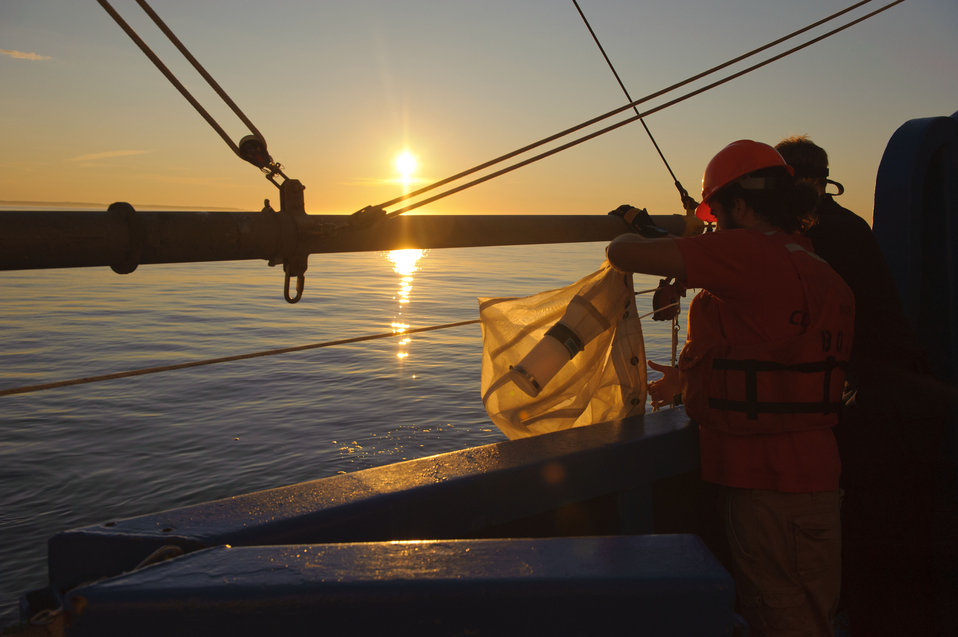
August 9, 2011 Sunrise zooplankton tow

Out near the mouth of the Webhannet River, Wells Maine.

On this survey EPA partnered with the Maine Department of Environmental Protection, biologists from the University of New England, and the Wells National Estuarine Research Reserves.

The biologists from each program have been working to better catalog species of larval fish (just hatched they can't swim yet) present particularly near the mouths of the Webhannet and Saco Rivers, in the estuaries where the salt water from the ocean and the fresh water from the river meet.

The Bold is helping them collect zooplankton further offshore to compare the species they've been finding in the estuaries. This type of information can help to better protect fisheries and their habitats.